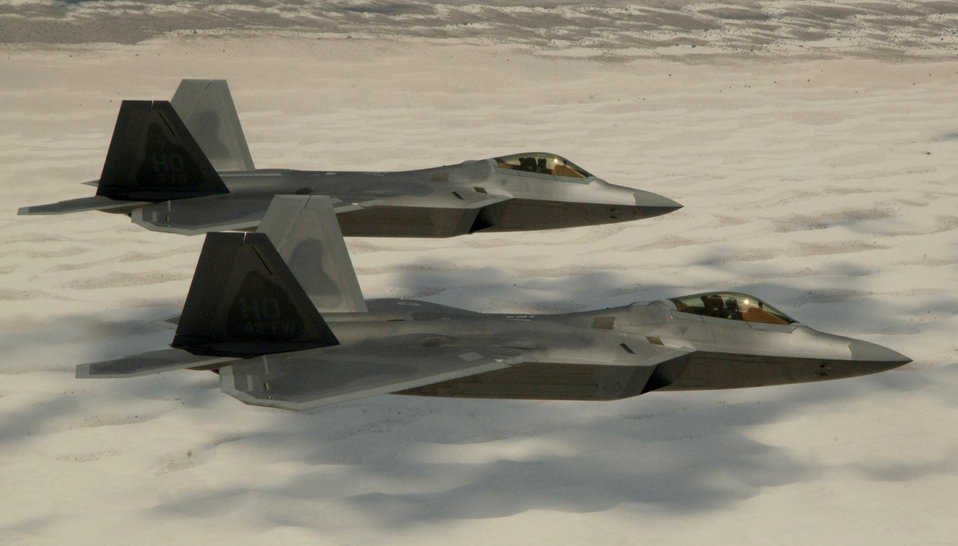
Headed for home

Col. Jeff Harrigian, 49th Fighter Wing commander, and Lt. Col. Mike Hernandez, 7th Fighter Squadron commander, fly F-22 Raptors June 2 over White Sands National Monument on the way to their home base, Holloman Air Force Base, N.M.